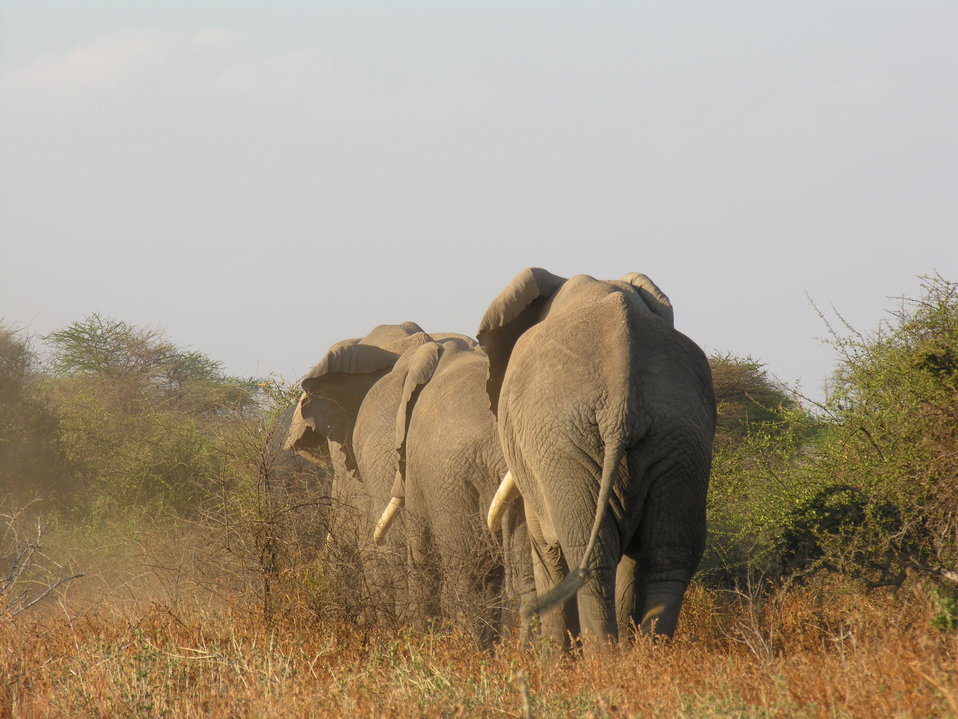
Elephant Study 1

Reasercher Patrick Chiyo found that male elephants caused more destruction to peoples' farms near Amboseli, Kenya.